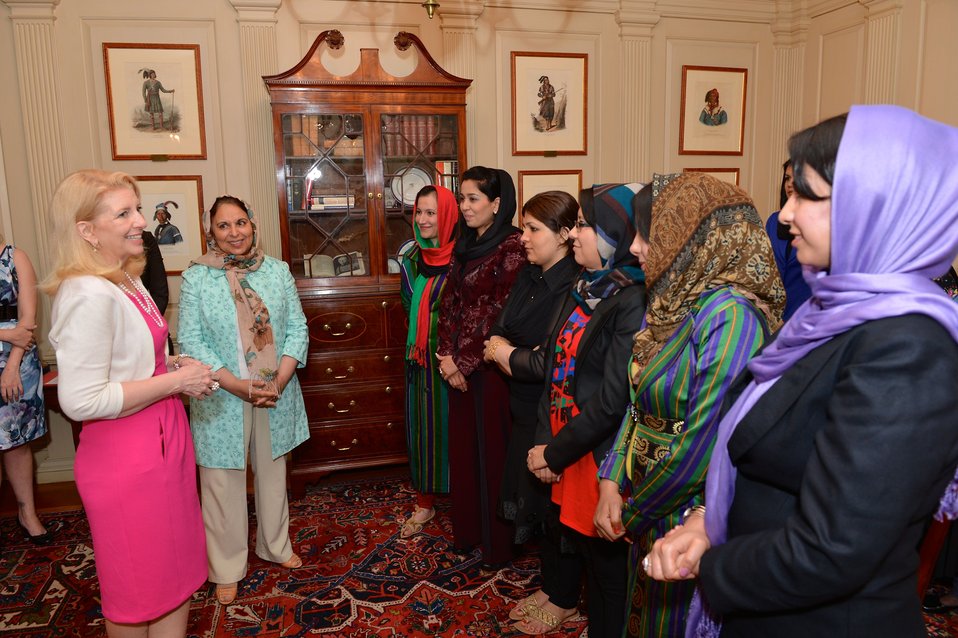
Ambassador Russell Speaks With Female Afghan Journalists

Ambassador-at-Large for Global Women's Issues Catherine Russell speaks with women Afghan journalists who are visiting Washington, D.C., on an International Visitors Leadership Program titled, 'Women Journalist and Media Advocacy,' at the U.S. Department of State on May 13, 2014.